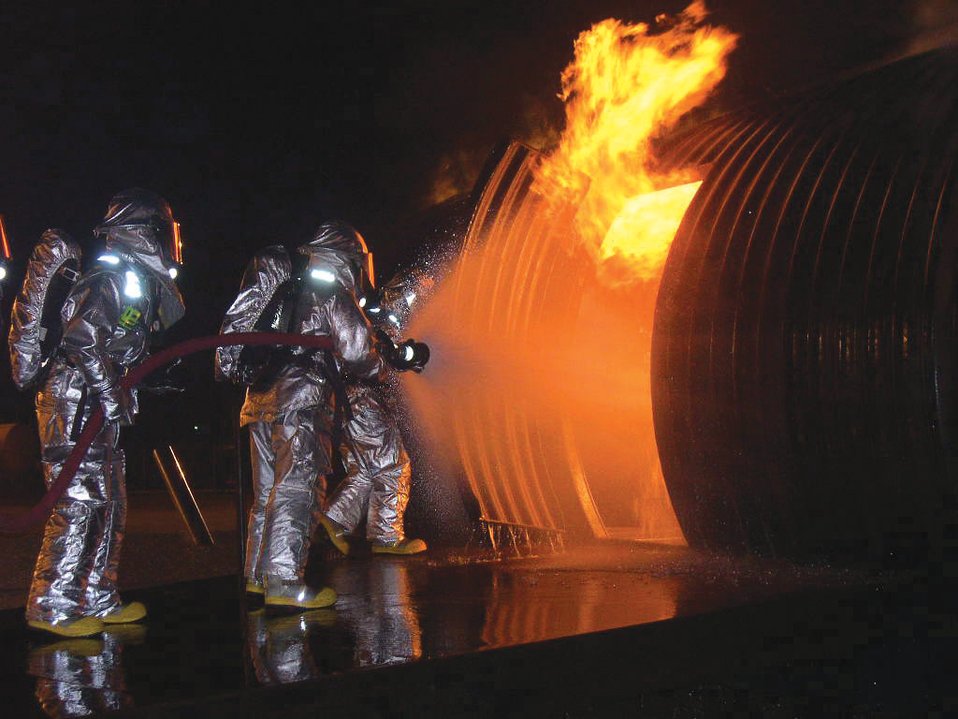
Fire battle

INCIRLIK AIR BASE, Turkey -- Fire blows out of a special aircraft fire trainer's fuselage while two firefighters work to combat the flames.